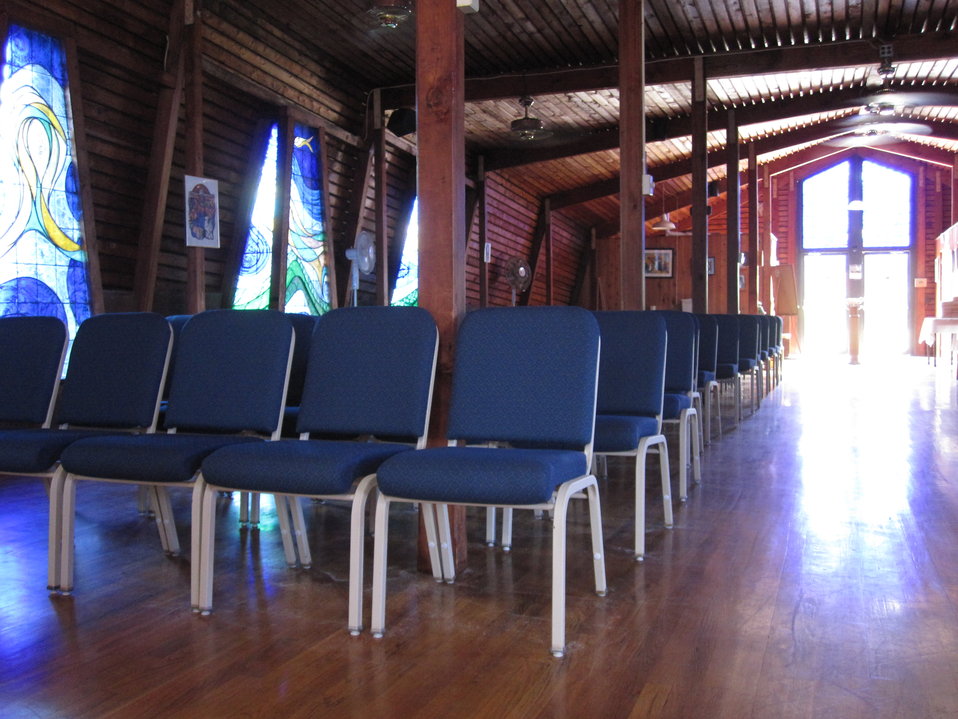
D-P-Beach Church Photo by Stevan